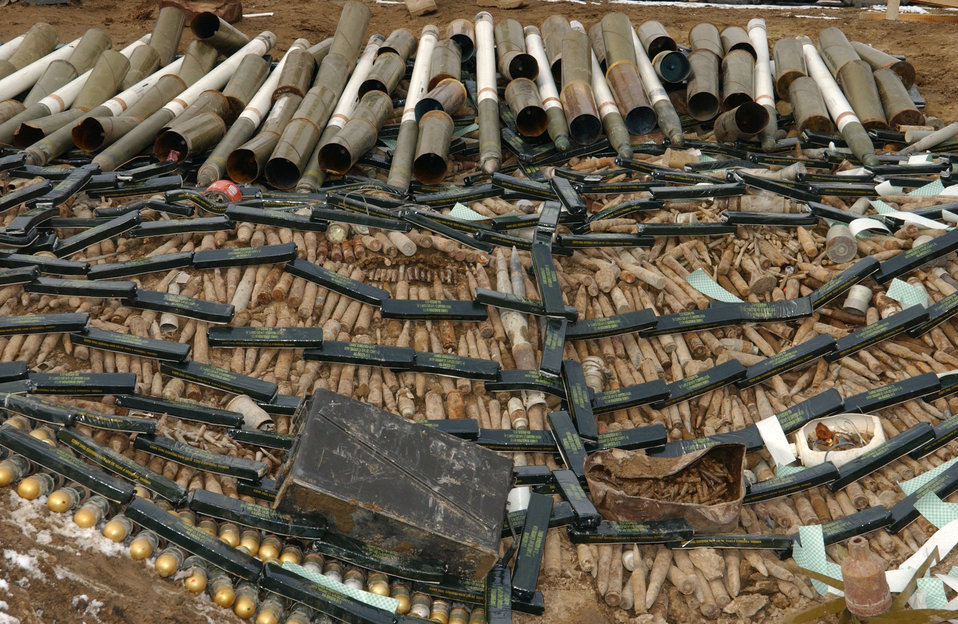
EOD Airmen destroy explosives

BAGRAM AIR BASE, Afghanistan -- Unexploded ordnance destroyed by the 455th Expeditionary Civil Engineer Squadron explosive ordnance disposal Airmen on Jan. 23 included everything from small arms, aircraft ammunitions and rockets, to Howitzer casings, large projectiles, rifle grenades and anti-tank mines.